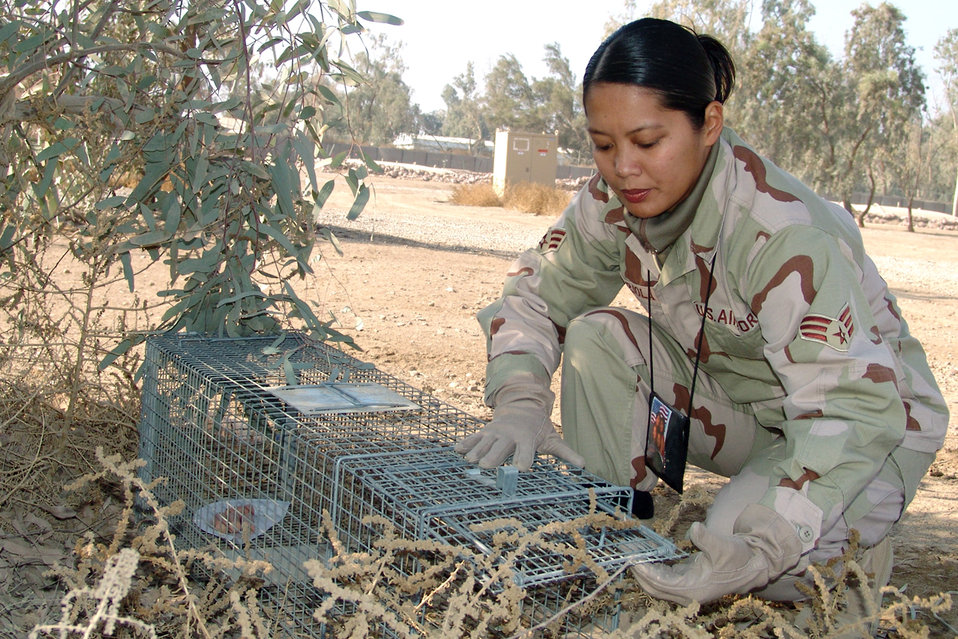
Pests no match for 'Bug Girl'

BAGHDAD, Iraq -- Senior Airman Amy Arriola sets a trap to catch stray cats and foxes. She is the pest controller for the 447th Expeditionary Civil Engineer Squadron at Camp Sather here, and is deployed from Guam Air National Guard's 254th CES.